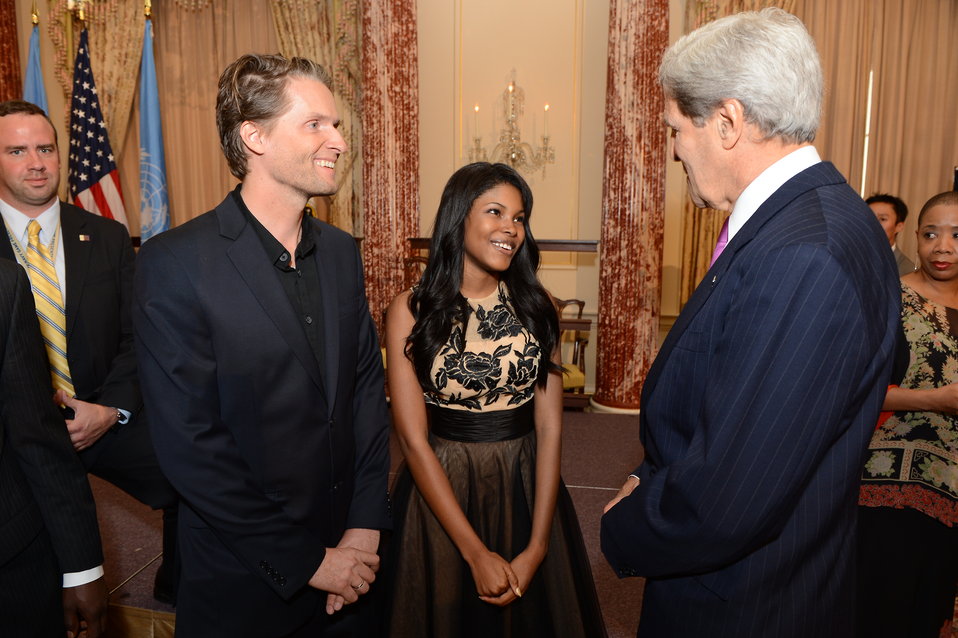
Secretary Kerry Speaks With Musicians Cheick Hamala Diabate and Diamond White

U.S. Secretary of State John Kerry speaks with musicians Cheick Hamala Diabate and Diamond White at the World at an event in recognition of World Refugee Day at the U.S. Department of State in Washington, D.C., on June 20, 2013.